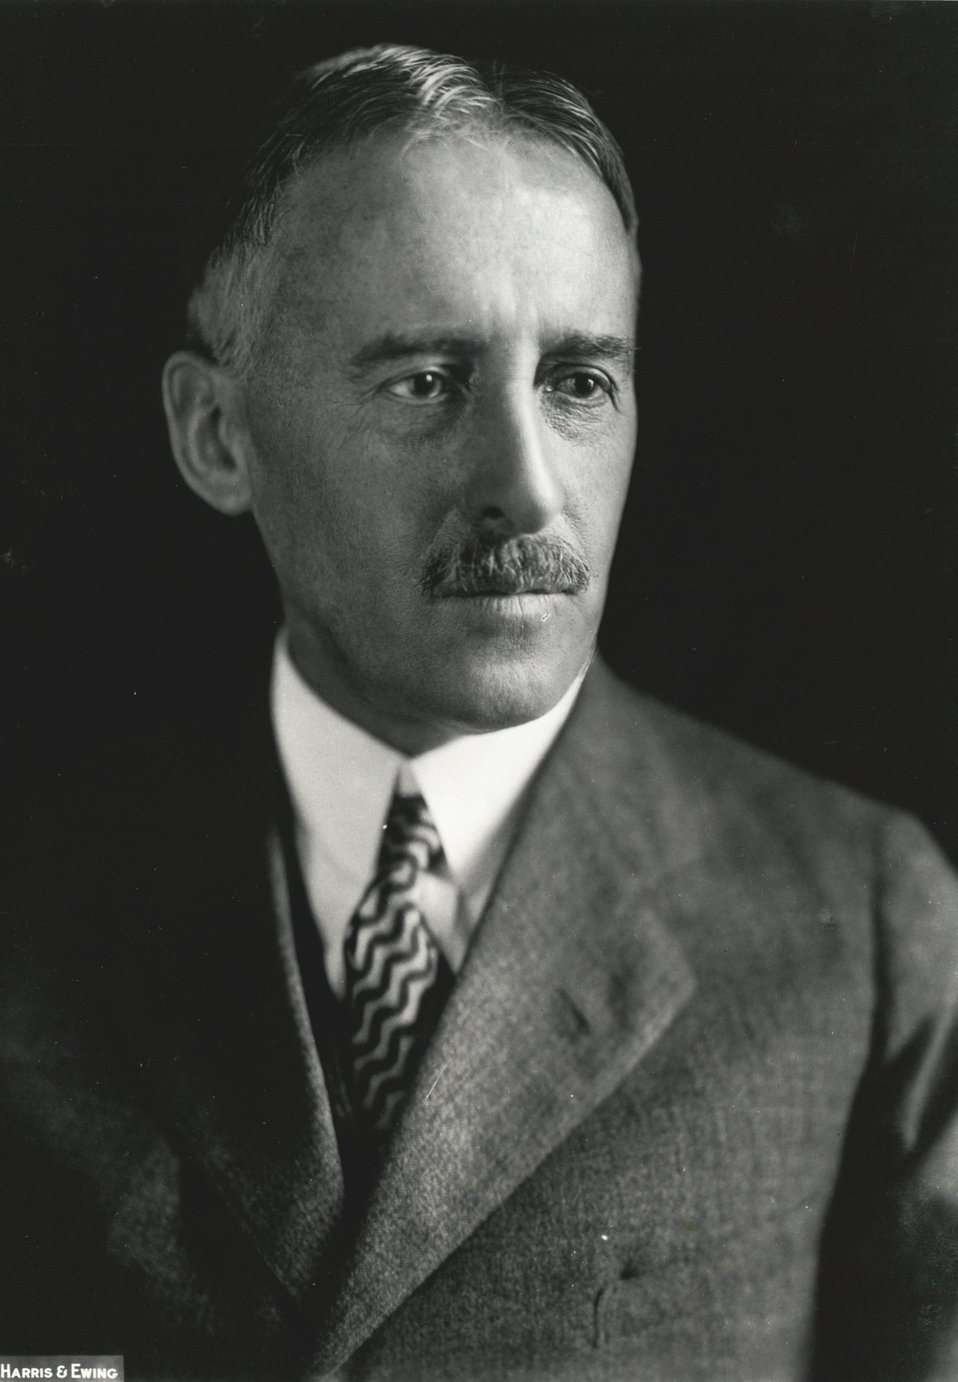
Henry Lewis Stimson, U.S. Secretary of State, March 28, 1929 to March 4, 1933